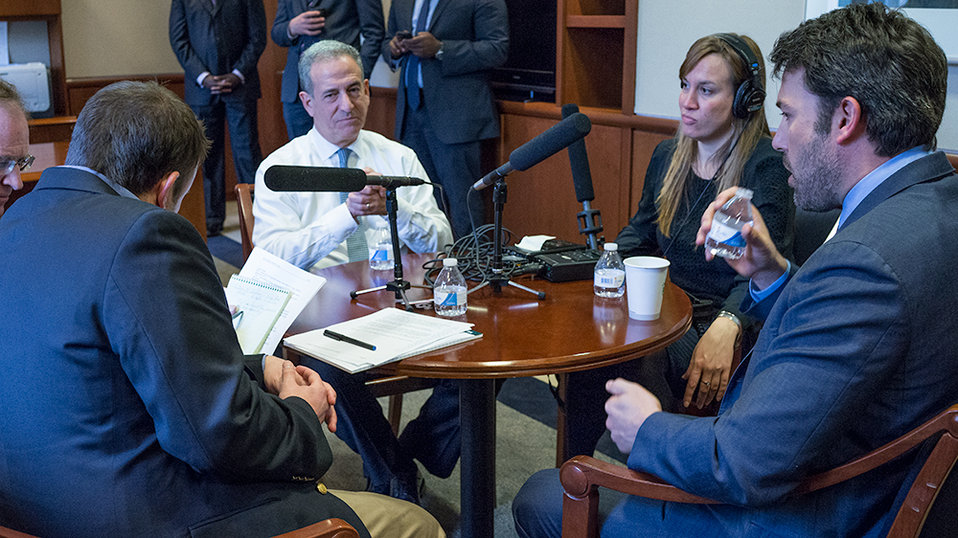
Special Envoy Feingold and Ben Affleck Participate in an Interview with NPR News' McGuffin

Special Envoy for the Great Lakes and the Democratic Republic of the Congo Russ Feingold and Ben Affleck, Founder of the Eastern Congo Initiative, participate in an interview with David McGuffin of NPR News at the U.S. Department of State in Washington, D.C., on February 26, 2014.